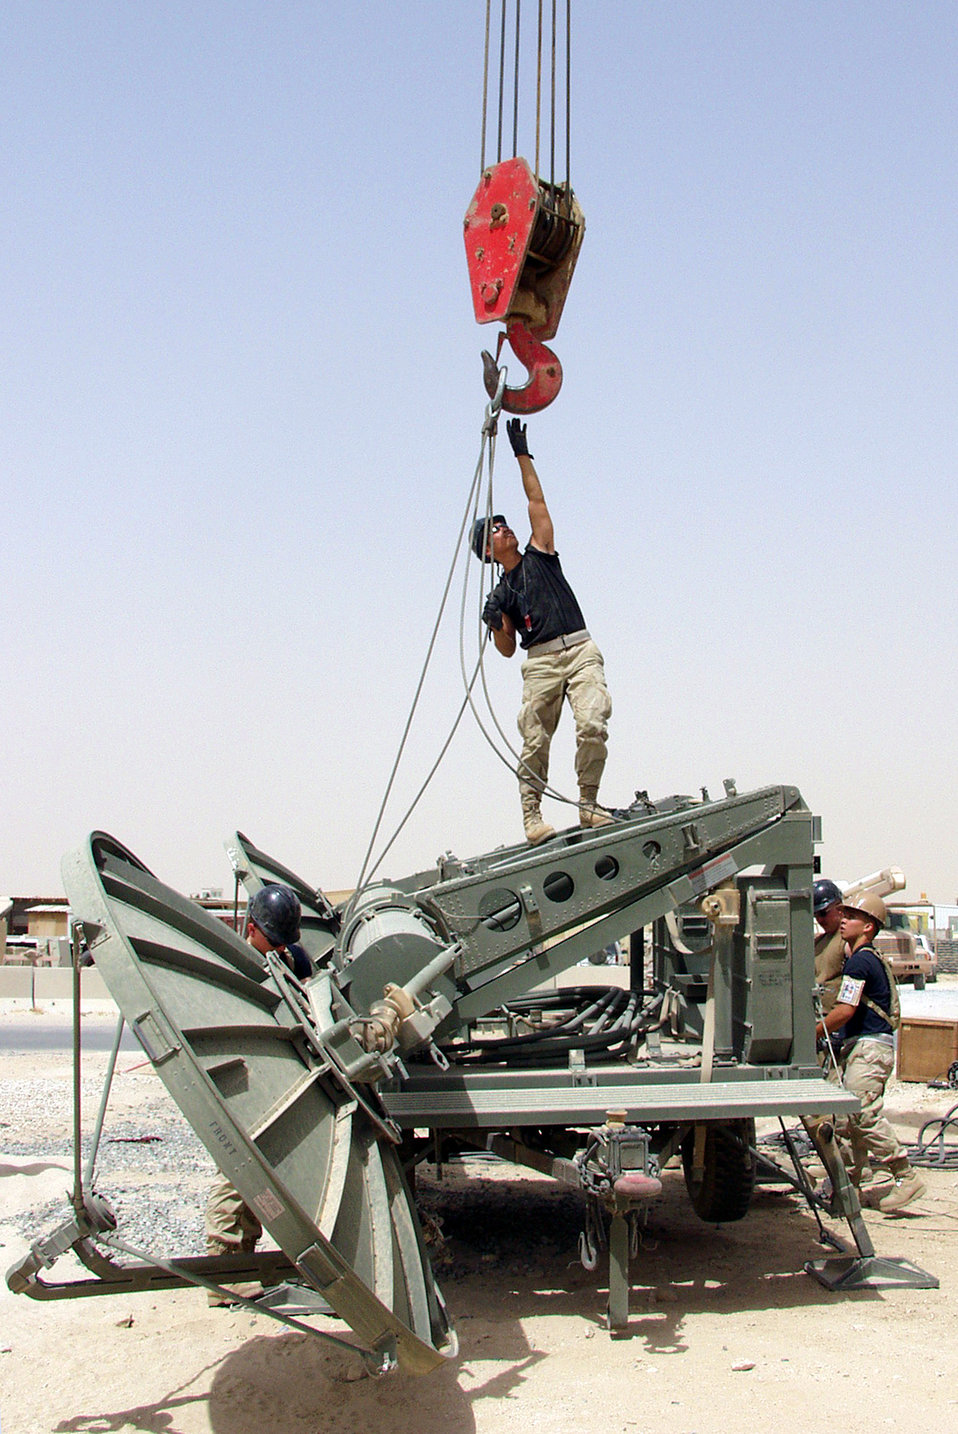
Hook 'em up

OPERATION IRAQI FREEDOM - Senior Airman Bryan Phan, a member of the 386th Expeditionary Air Control Squadron, reaches for a crane hook to remove the lift sling from a quick reaction antenna. The antenna was one of the larger pieces of equipment being removed by the squadron for redeployment. The squadron, better known by its call sign